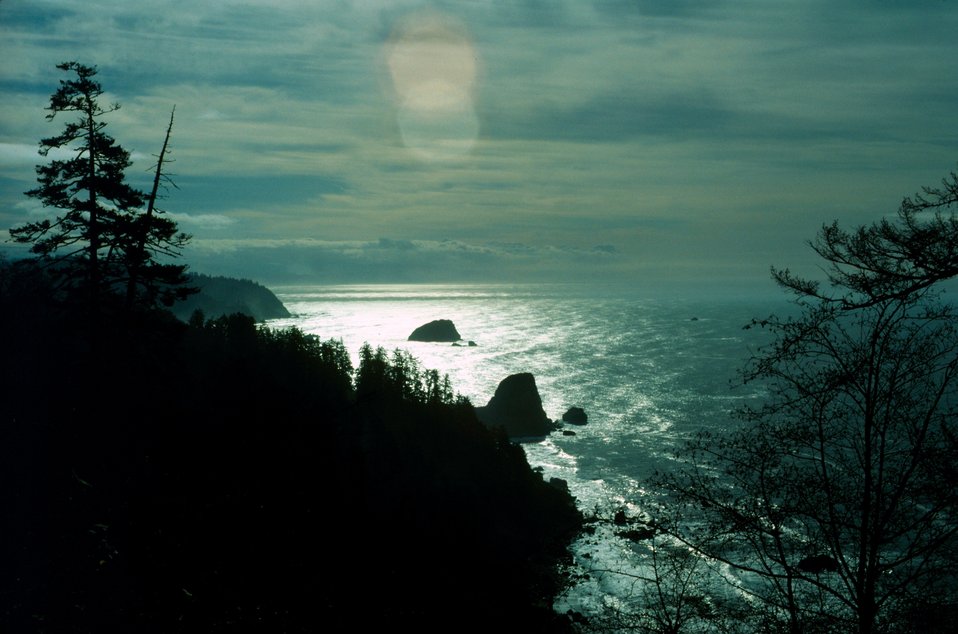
Del Norte County coastline just south of the California-Oregon border.